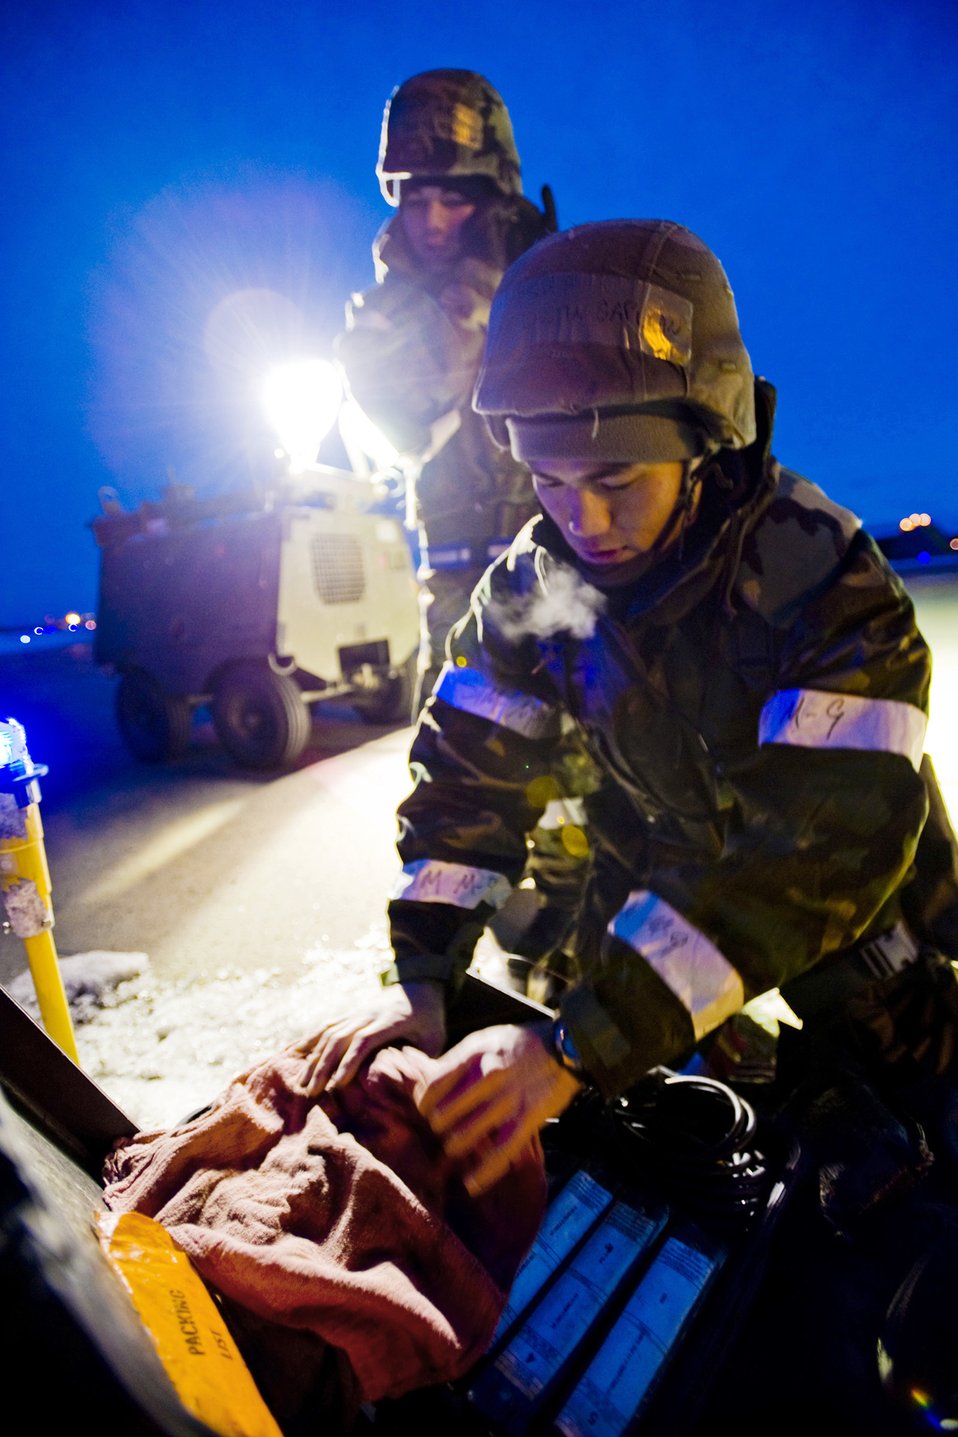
Misawa operations after dark

Staff Sgt. Dustin Gapusan and Airman 1st Class Troy Taitogue review launch-kit items during a shift turnover Feb. 1, 2010, on the flightline at Misawa Air Base, Japan. Sergeant Gapusan relieved Airman Taitogue as night operations began during the base operational readiness exercise. The Airmen are crew chiefs with the 35th Aircraft Maintenance Squadron.